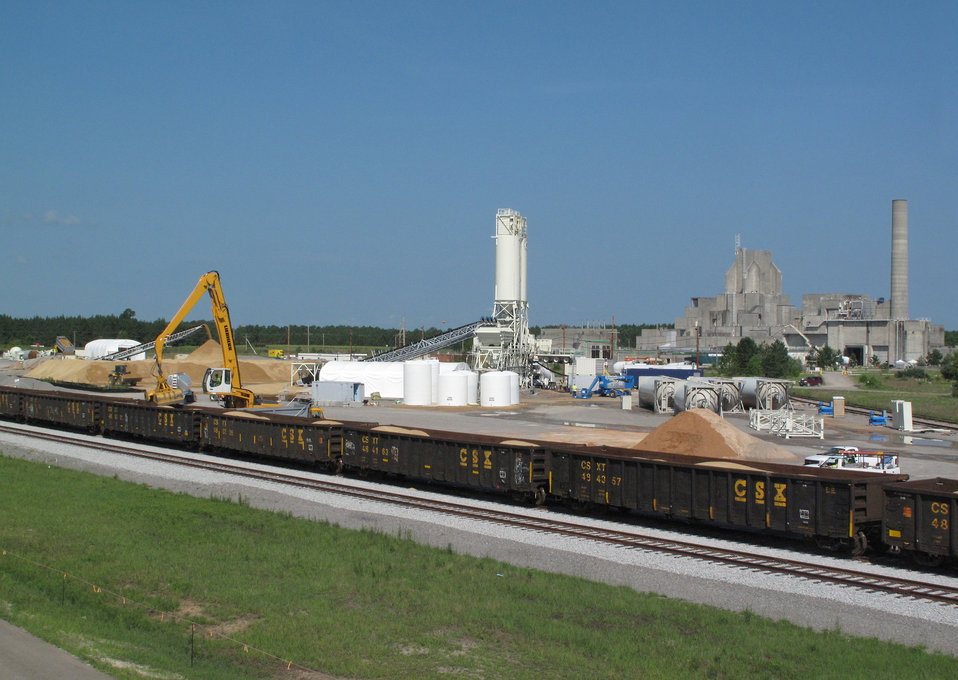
P Area Batch Plant

Batch plant built to support grouting in P and R reactor (with P reactor in the background). Grout is a cement-like mixture used in decommissioning reactors.